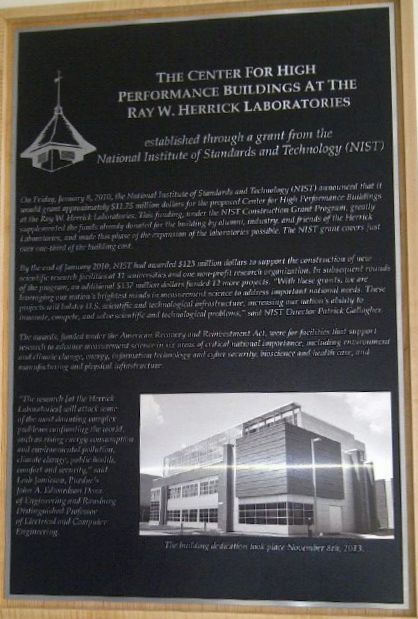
Purdue University Plaque

Plaque in the lobby of Purdue University’s Center for High Performance Buildings Ray W. Herrick Laboratories made possible with a NIST construction grant.